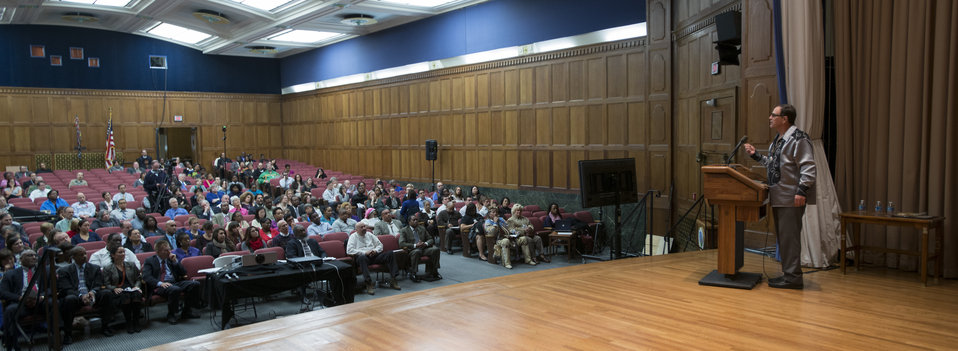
United South and Eastern Tribes President Brian Patterson makes remarks at the 2013 American Indian and Alaska Native Heritage Observance at the U.S. Department of Agriculture (USDA) on Thursday, Nov. 14, 2013 in Washington, D.C. The theme of this year’s event was “Guiding Our Destiny with Heritage and Traditions.”